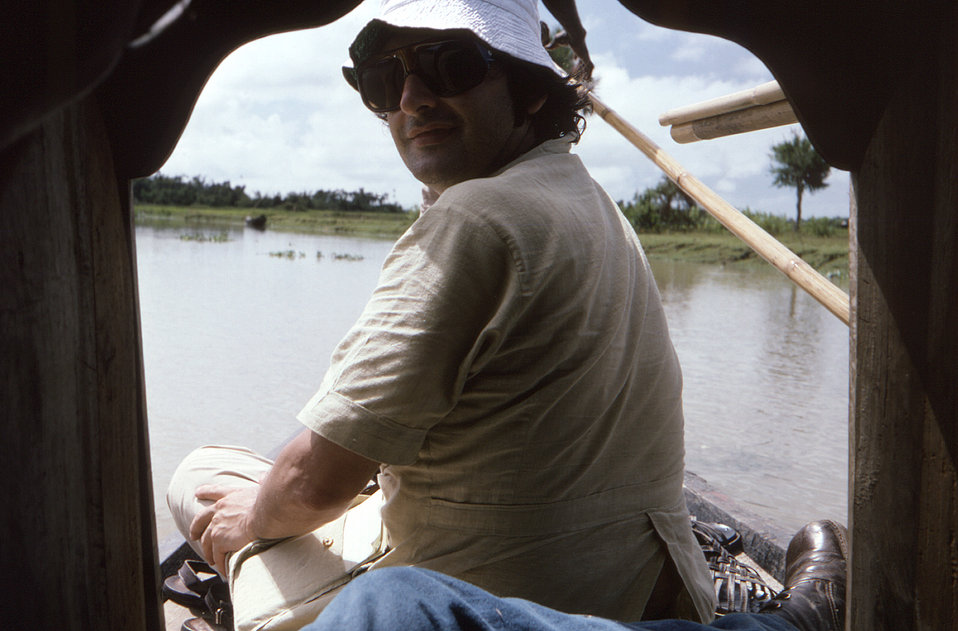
This 1975 photograph depicted Dr. Lawrence K. Altman, a correspondent from the New York Times, who at the time, was aboard a riverboat in the north-eastern Bangladesh District of Sylhet.